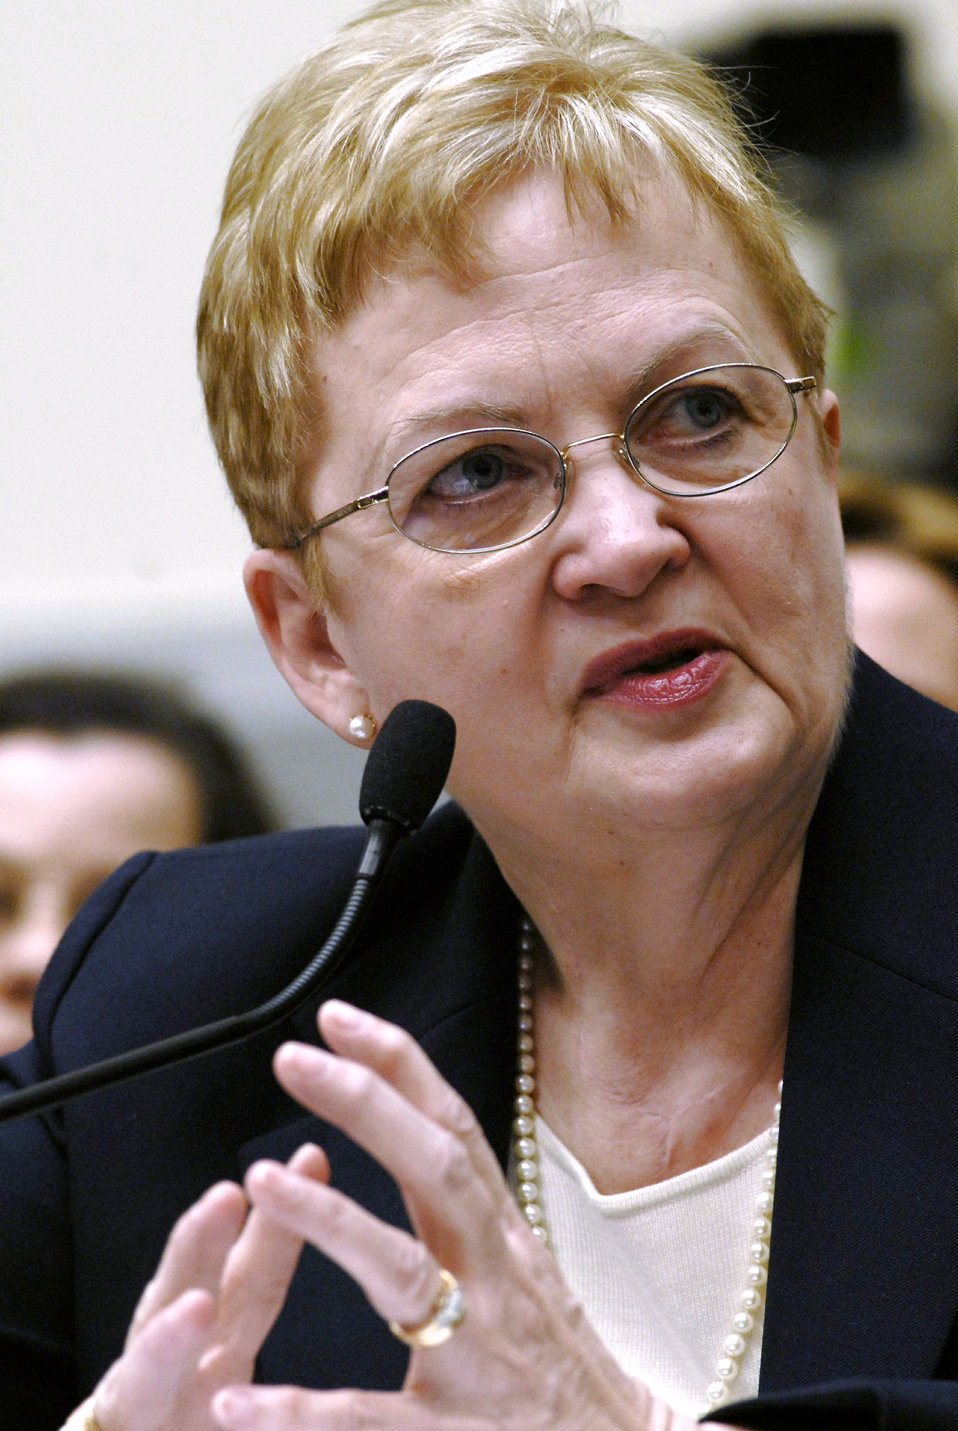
Bystanders key to preventing sexual assault

Charlene Bradley answers questions from the House Armed Services Committee Military Personnel Subcommittee March 6 in Washington, D.C. Ms. Bradley serves as the Secretary of the Air Force's policy expert on preventing sexual assault. She and other sister service representatives answered questions from the subcommittee about efforts to combat sexual assault.